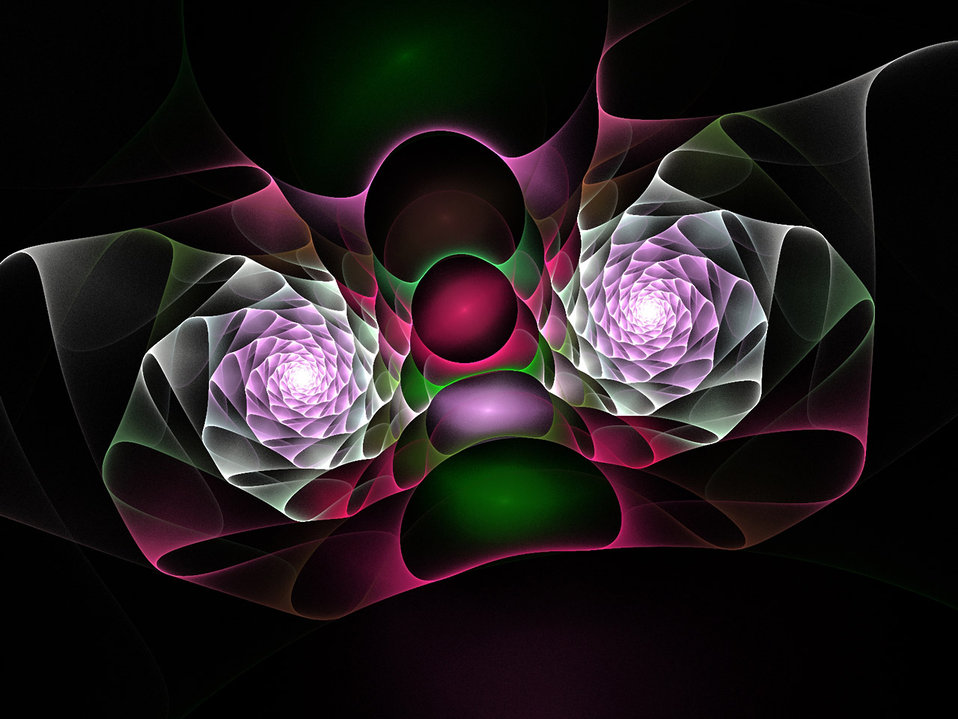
Rosettes

Fractal in pink and green in the shape of rosettes.